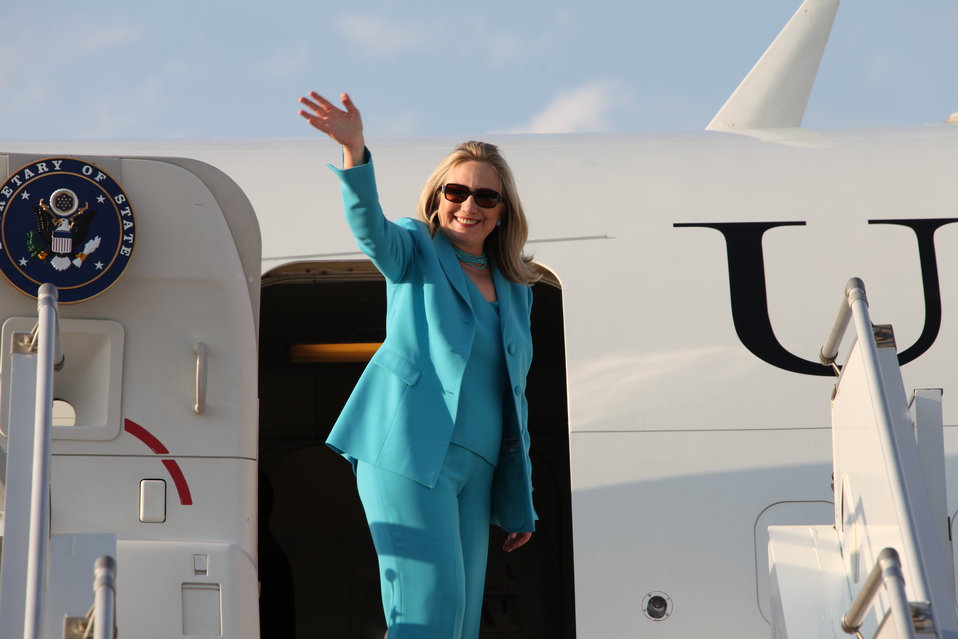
Secretary Clinton Departs Nay Pyi Taw En Route to Rangoon

U.S. Secretary of State Hillary Rodham Clinton departs Nay Pyi Taw en route to Rangoon, Burma, on December 1, 2011.